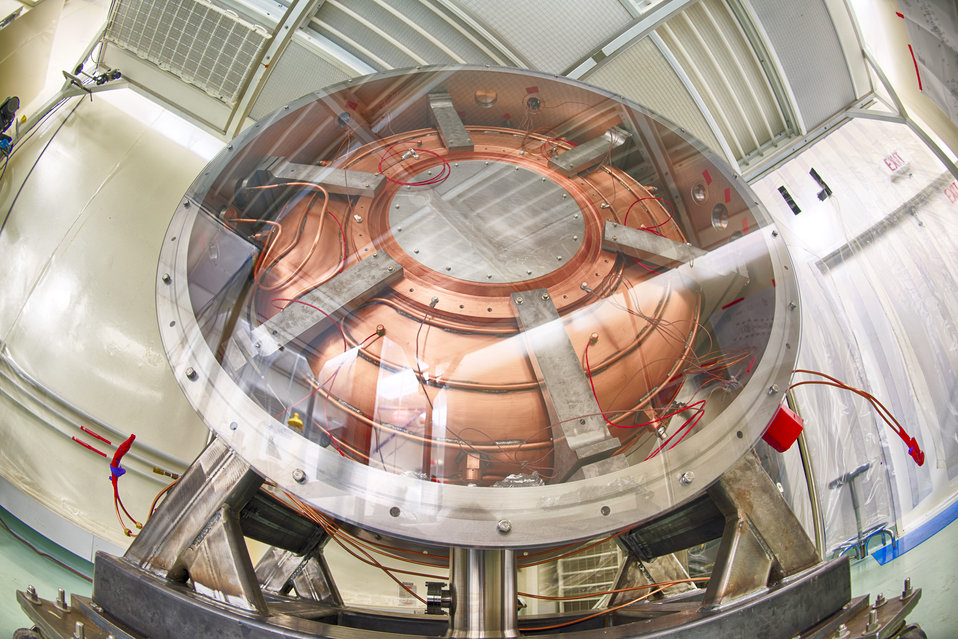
MICE SINGLE CAVITY TEST STAND AT LAB 6 AT THE FERMI NATIONAL ACCELERATOR LABORATORY.